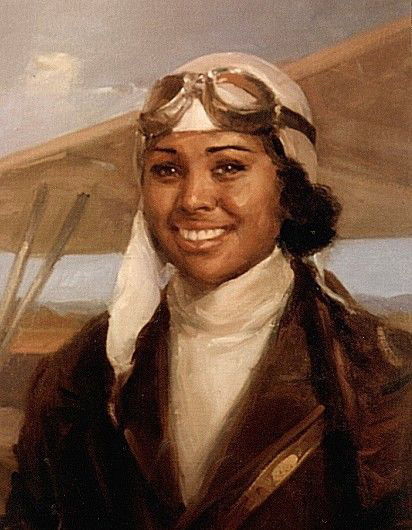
Bessie Coleman begins series highlighting African-Americans who made impact on aviation

Bessie Coleman: After traveling to France to attend flight school, Coleman returned to U.S. to dazzle crowds with aerial prowess.